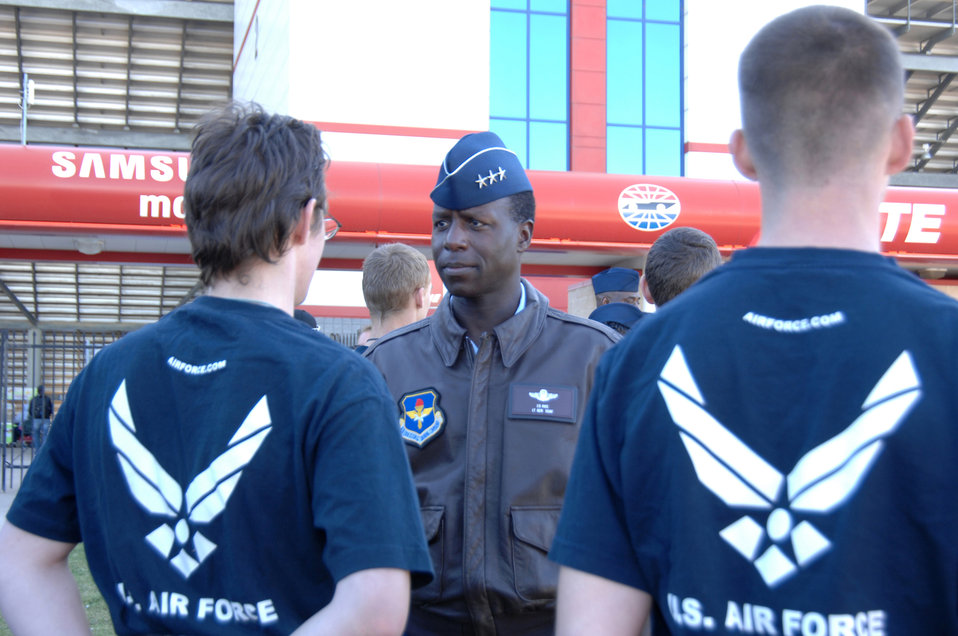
General Rice at Texas Motor Speedway

Lt. Gen. Edward A. Rice Jr., incoming commander of Air Education and Training Command, chats with Delayed Enlistment Program members at Texas Motor Speedway Nov. 7, 2010, before the NASCAR Sprint Cup Series race. The general, who has been confirmed for his fourth star, conducted the DEP swearing-in ceremony in front of thousands of NASCAR fans before the start of the race.